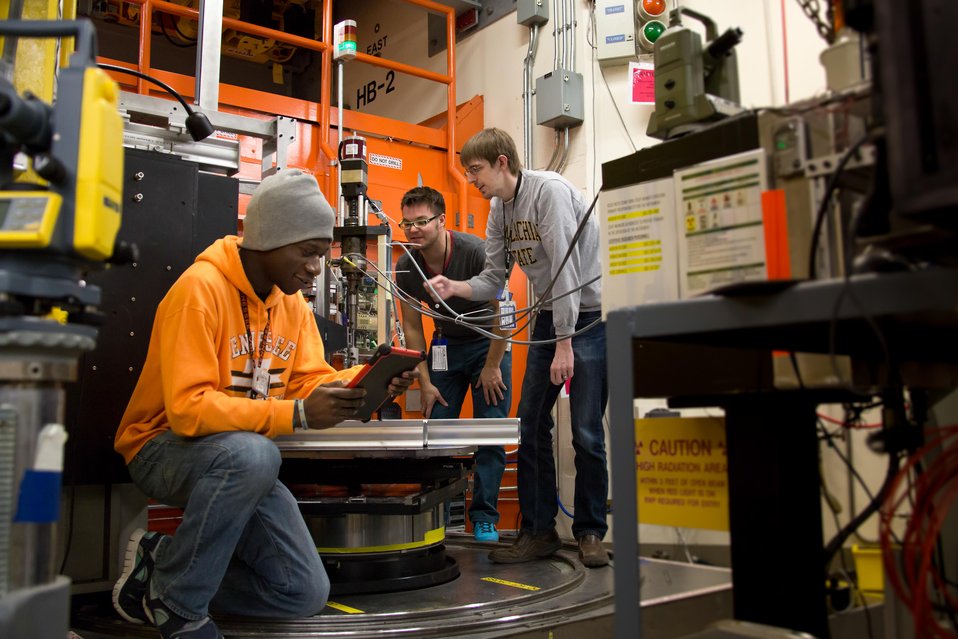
UNIVERSITY OF TENNESSEE PHD STUDENTS ARE STUDYING IN SITU TORSION RESPONSE OF FCC AND HCP METALS ON BEAM LINE HB-2B AT THE HIGH FLUX ISOTOPE REACTOR, OR THE NEUTRON RESIDUAL STRESS MAPPING FACILITY AT ORNL.